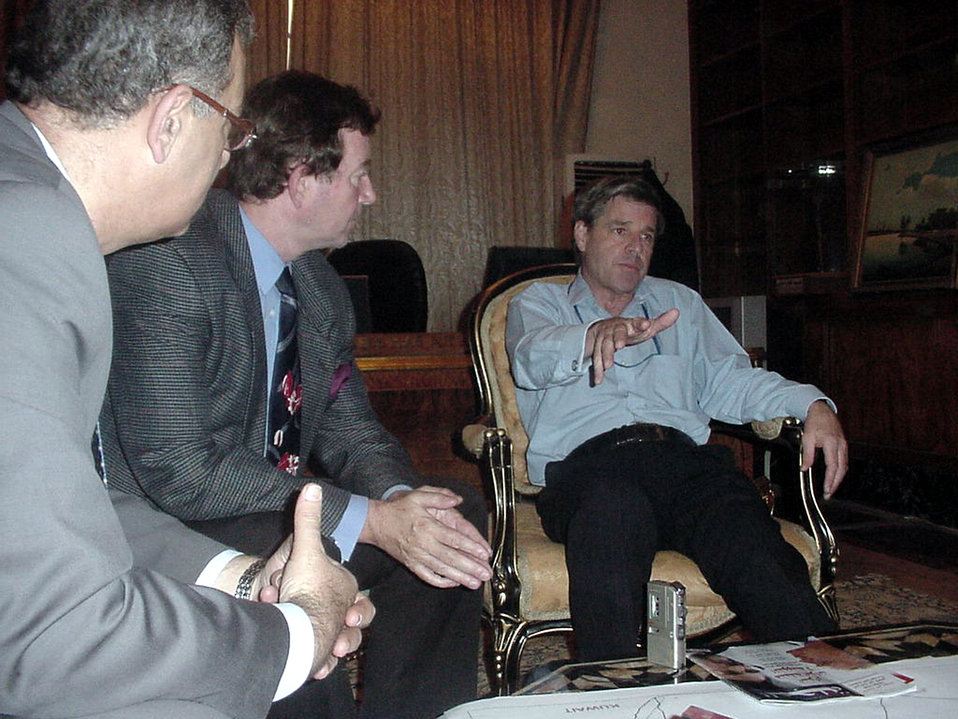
MEETING WITH AMBASSADOR BREMER

BAGHDAD, Iraq -- Reporters from Arab media headquartered in London, interview Ambassador Paul Bremer (right) during a recent visit here. Sponsored by the U.S. government, this was the first media trip to Iraq for the reporters.